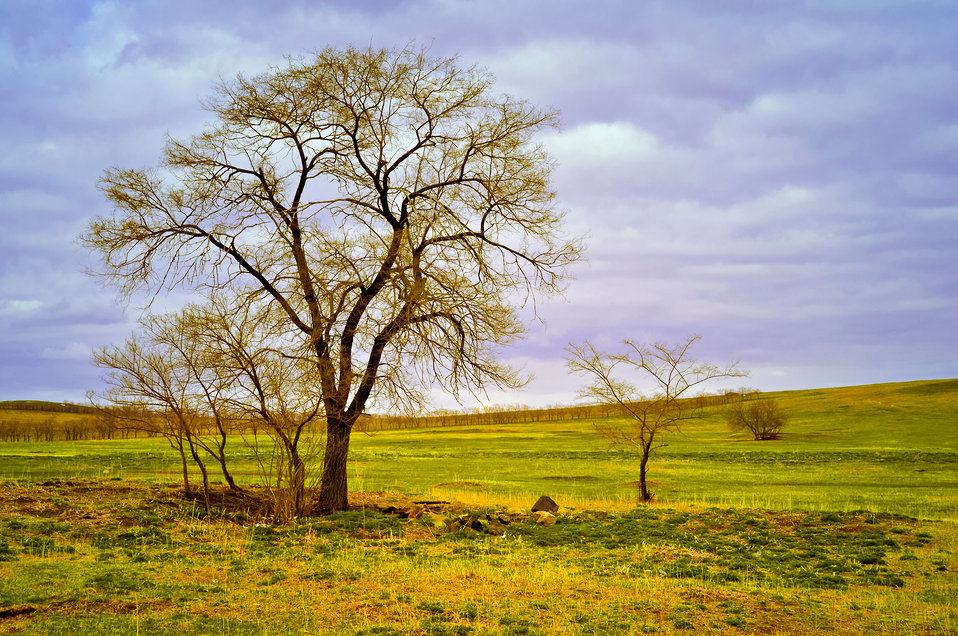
Tree in field.